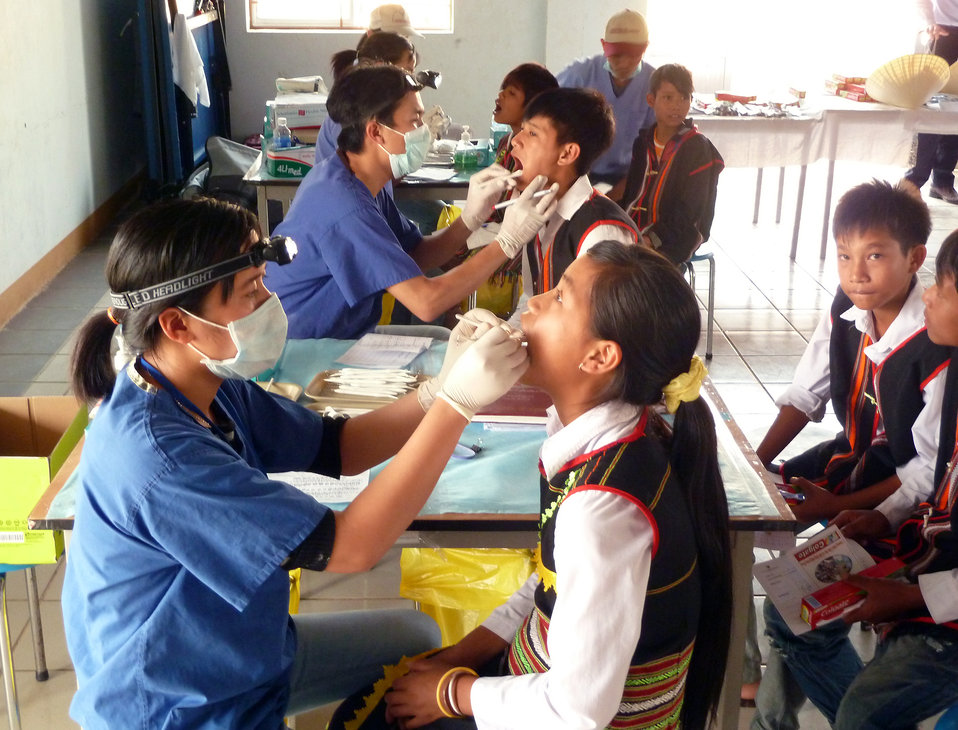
Children receive dental screening and care at the USAID-sponsored Kon Ray School

Implementing partner: East Meets West